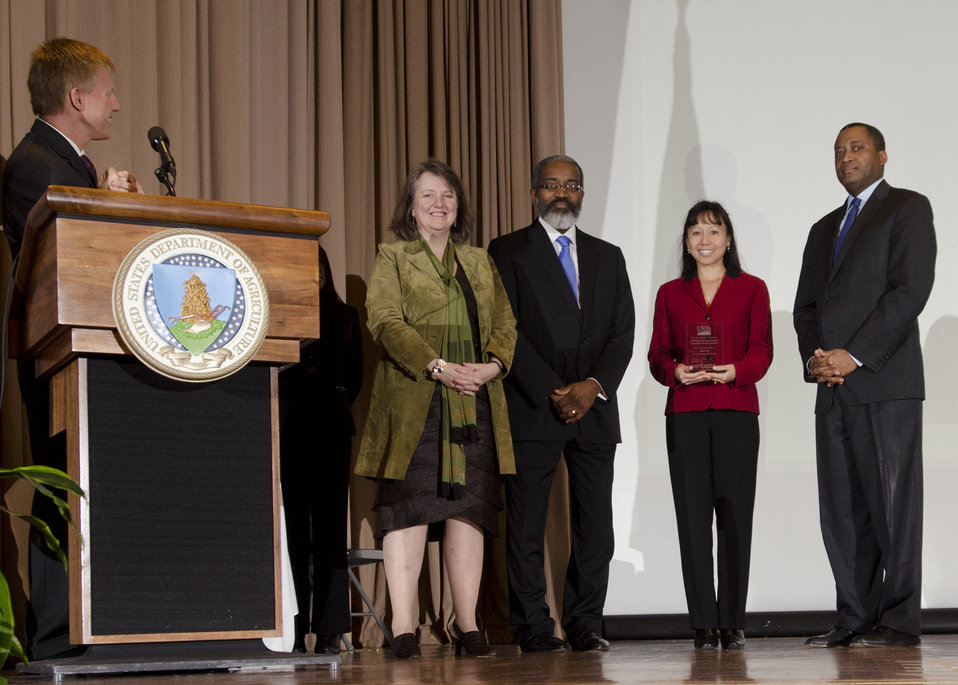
U.S. Department of Agriculture (USDA) Natural Resource Conservation Service (NRCS) Public Affairs Specialist from Honolulu, HI Jolene Lau receives the Dr. Martin Luther King, Jr. National Service Day Drum Major Service Award at the Jefferson Auditorium in Washington, D.C. on Tuesday, Jan. 15, 2013. (L to R, Agriculture Director Faith Based and Neighborhood Partnerships Max Finberg (at podium), Agriculture Deputy Secretary Kathleen Merrigan, v Dr. Gregory Parham, Jolene Lau, and Agriculture Assistant Secretary for Civil Rights Dr. Joe Leonard).